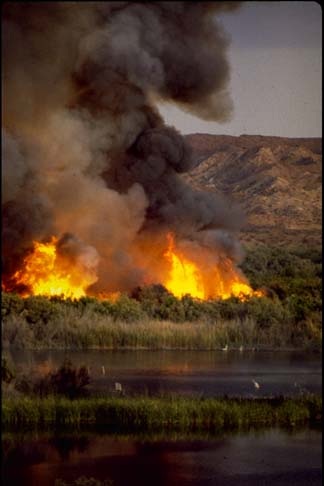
Wildland fire along the Lower Colorado River.